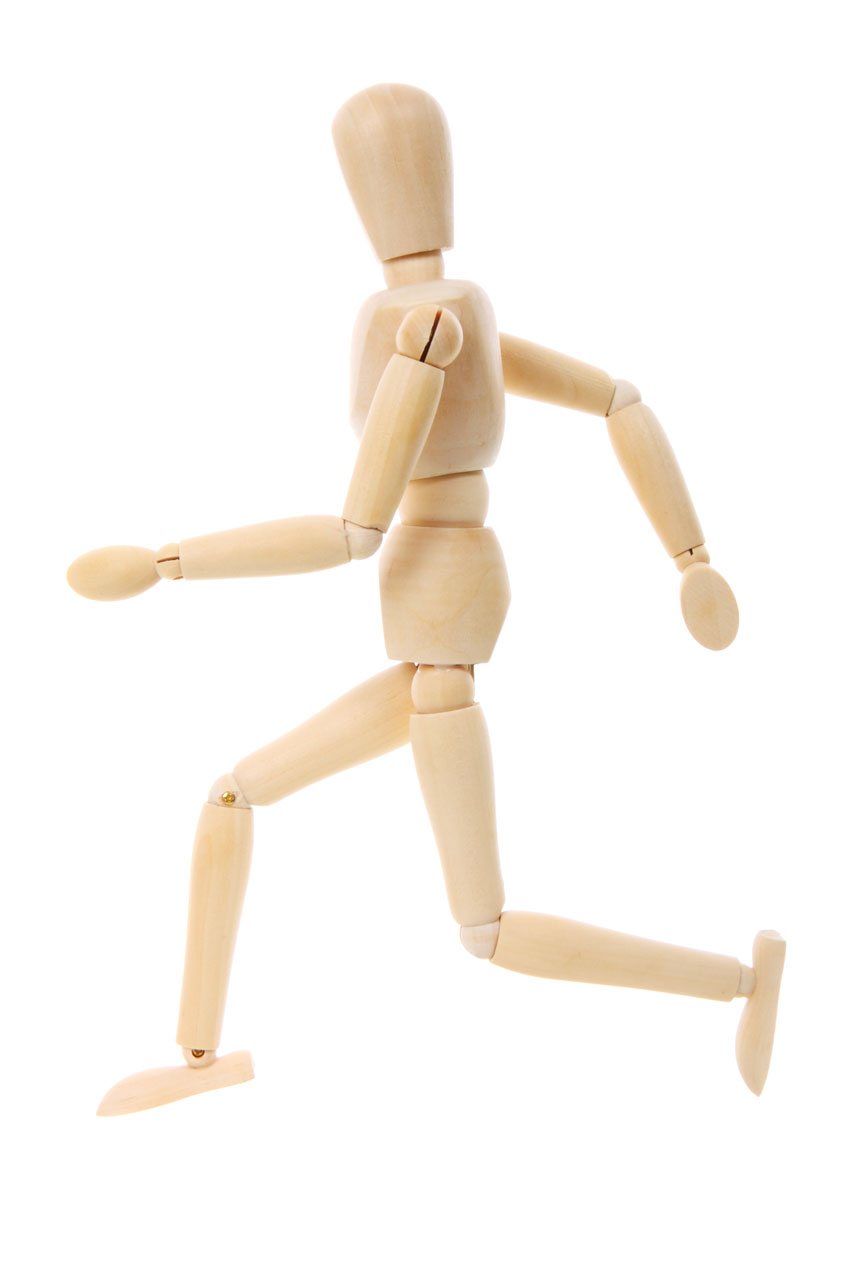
Running

Wooden mannequin running isolated on white background.